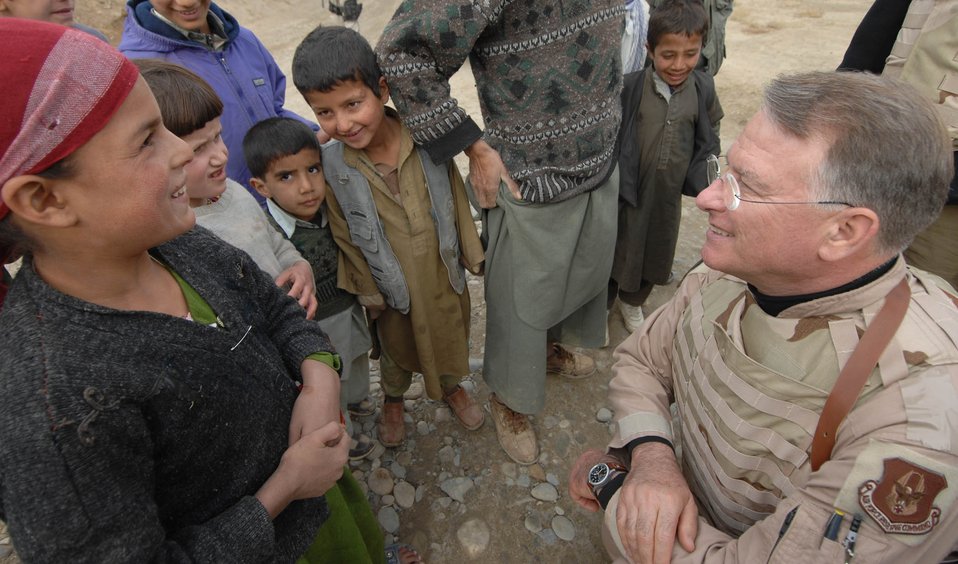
Reserve commander delivers cheer to Afghans

Children greet Lt. Gen. John Bradley, commander of Air Force Reserve Command, at a village near here Dec. 3. General Bradley arrived here Dec. 2 with more than 25,000 pounds of humanitarian relief supplies donated by his wife, Jan, for distribution to local villages such as this one.